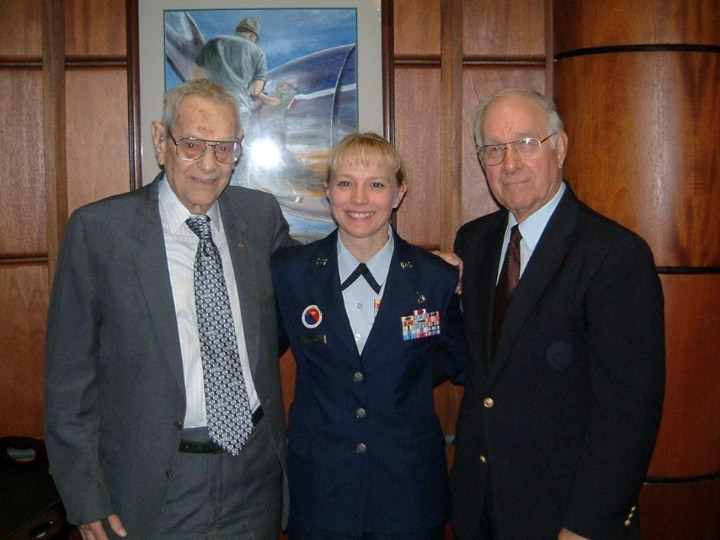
Air Force pioneer gone, but not forgotten

Chief Master Sgt. of the Air Force Paul W. Airey, Chief Master Sgt. Pamela Derrow and Chief Master Sgt. of the Air Force Sam E. Parish take a moment to share a photo opportunity in 2007. Chief Airey passed away March 11. Chief Airey was the first chief master sergeant of the Air Force, Chief Derrow is the U.S. Air Forces in Europe command chief, and Chief Parish was the eighth chief master sergeant of the Air Force.